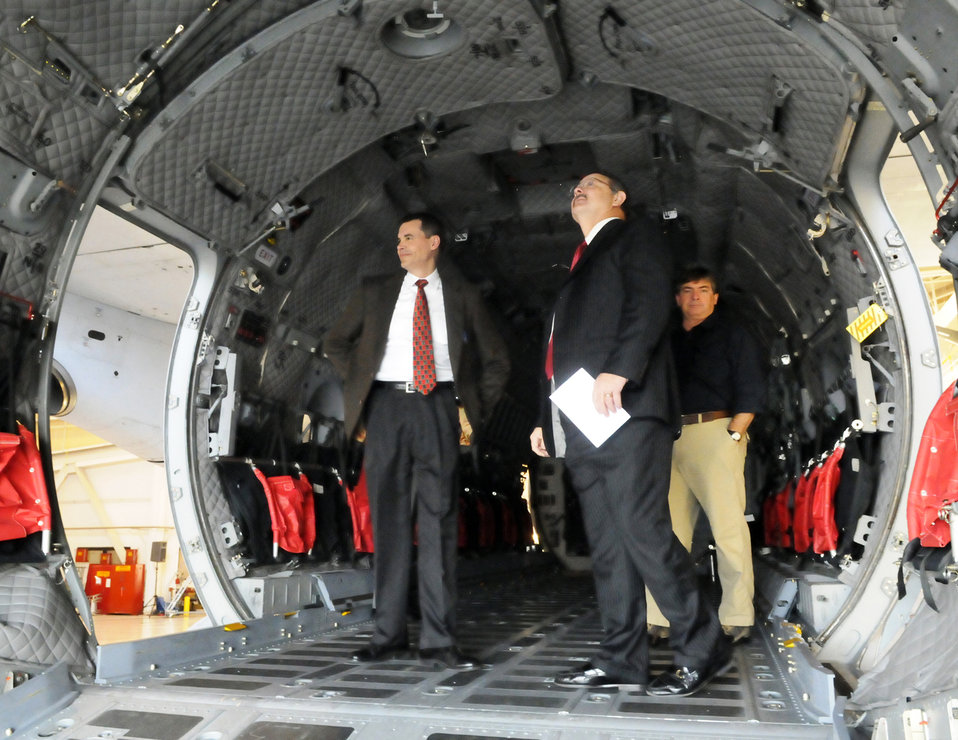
Carl Unholz, Deryl Israel and Mike Lavengood walk through the inside of the C-27

L-R, Carl Unholz, Deryl Israel and Mike Lavengood walk through the inside of the C-27 on display at the C-27J JCA Schoolhouse grand opening.